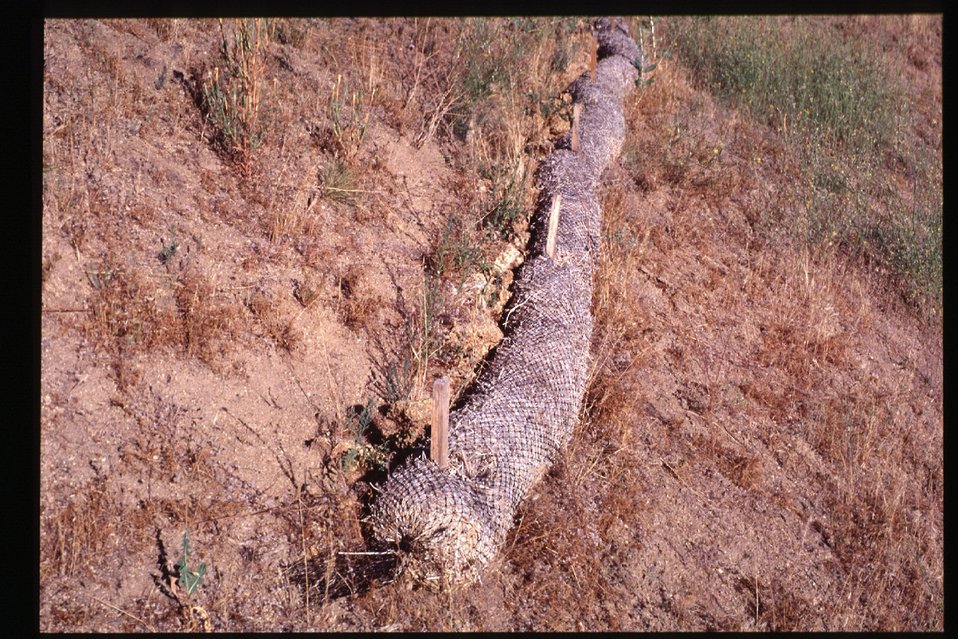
8th Street Fire Four Rivers Field Office LSRD Lower Snake River District